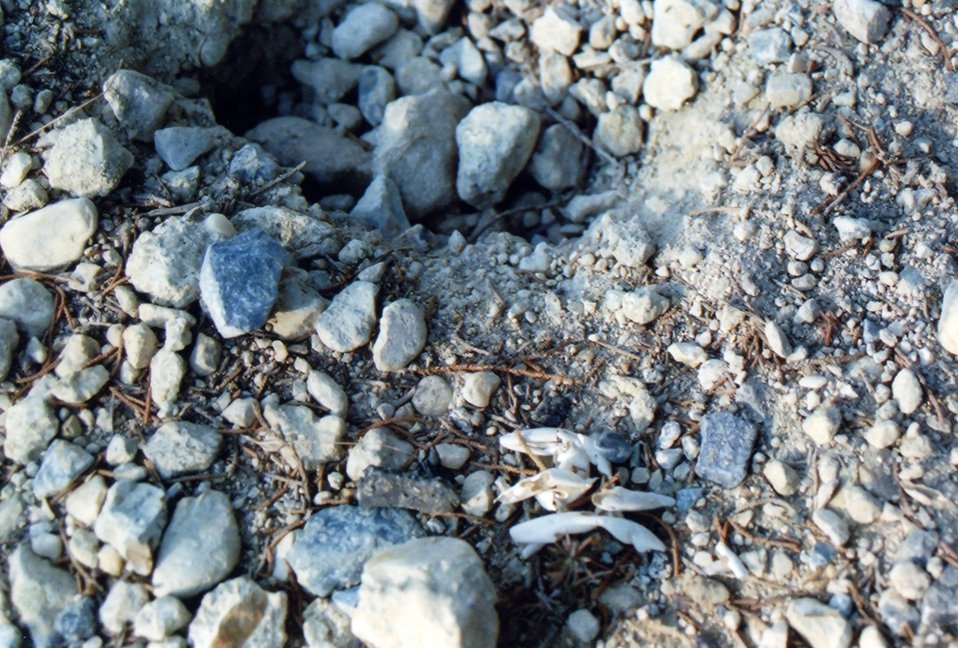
Diamondback terrapin nest in rocky soil. Note egg casings to left.